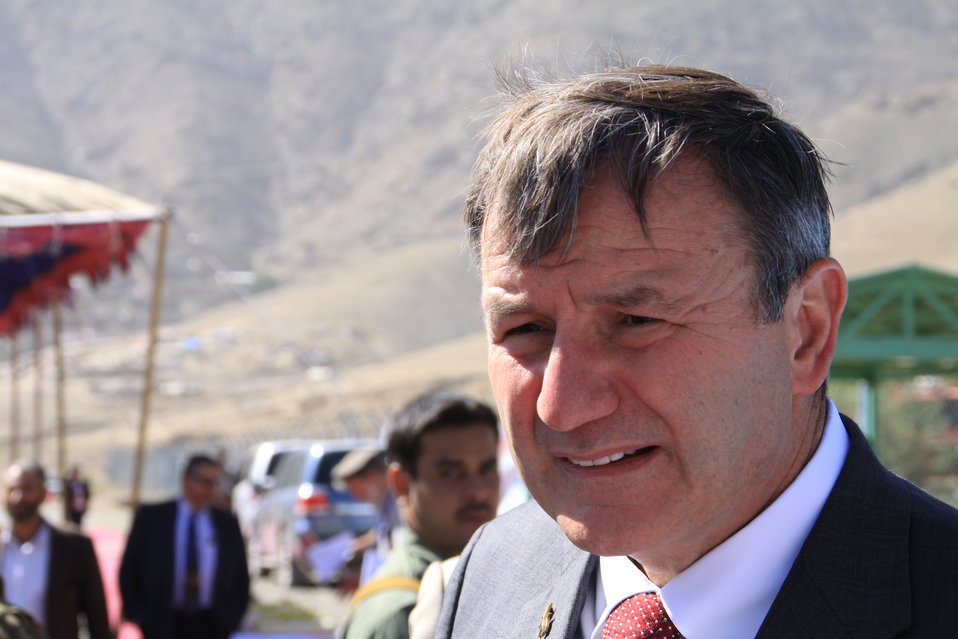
AVIPA Plus Wheat Seed Distribution 101005

US Ambassador Karl Eikenberry and USAID Acting Mission Director Kevin Brownawell joined the Minister of Agriculture, Irrigation and Livestock, H.E. Minister Mohammed Rahimi in signing a Memorandum of Understanding and distributing vouchers to area farmers for wheat and fertilizer.

US Ambassador Karl Eikenberry and USAID Acting Mission Director Kevin Brownawell joined the Minister of Agriculture, Irrigation and Livestock, H.E. Minister Mohammed Rahimi in signing a Memorandum of Understanding and distributing vouchers to area farmers for wheat and fertilizer.